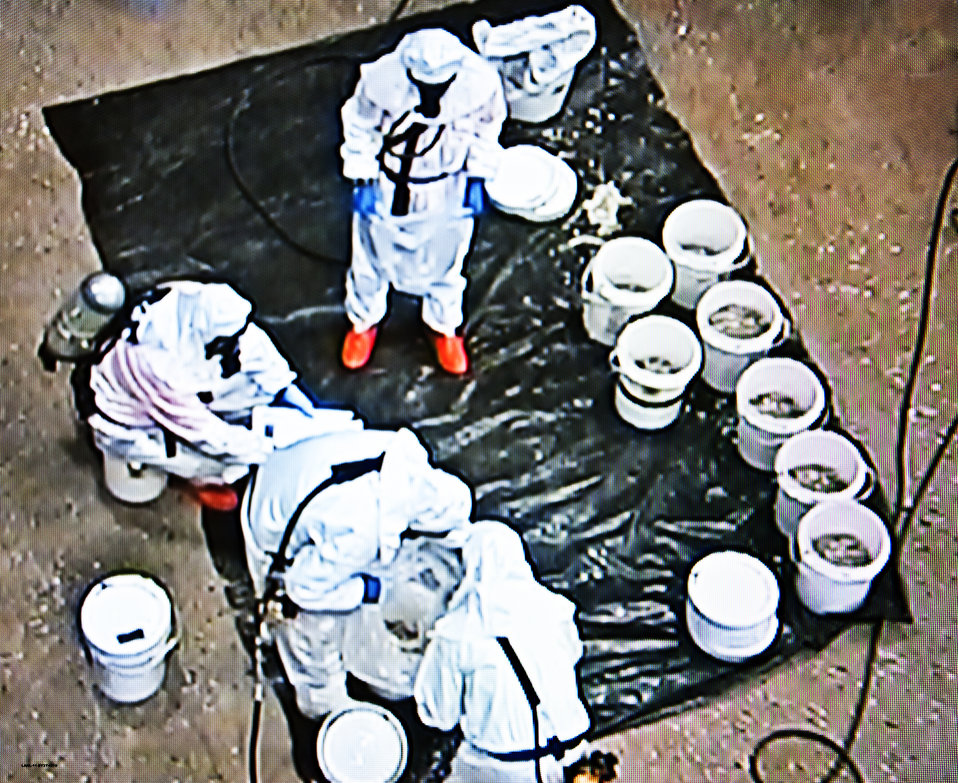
Unexpected Discovery Slows Excavation

Anomalies discovered during excavation of Material Disposal Area B are repackaged inside an enclosure.

“We began excavating the last couple of thousand cubic yards of soil and discovered unexpectedly higher levels of radioactivity,” said MDA-B Program Director Al Chaloupka. “As a consequence, we slowed excavation dramatically so we could be certain the work is done safely.”

With about 98 percent of excavation complete and only about 20 feet of soil remaining to be excavated in one of the protective enclosures, the discovery of higher levels of radioactivity activated procedures already in place for just such an eventuality.

“Our operations personnel are being very diligent about excavation, packaging and contamination control of our waste containers,” Chaloupka said. “Our bottom line is to do this work safely.”